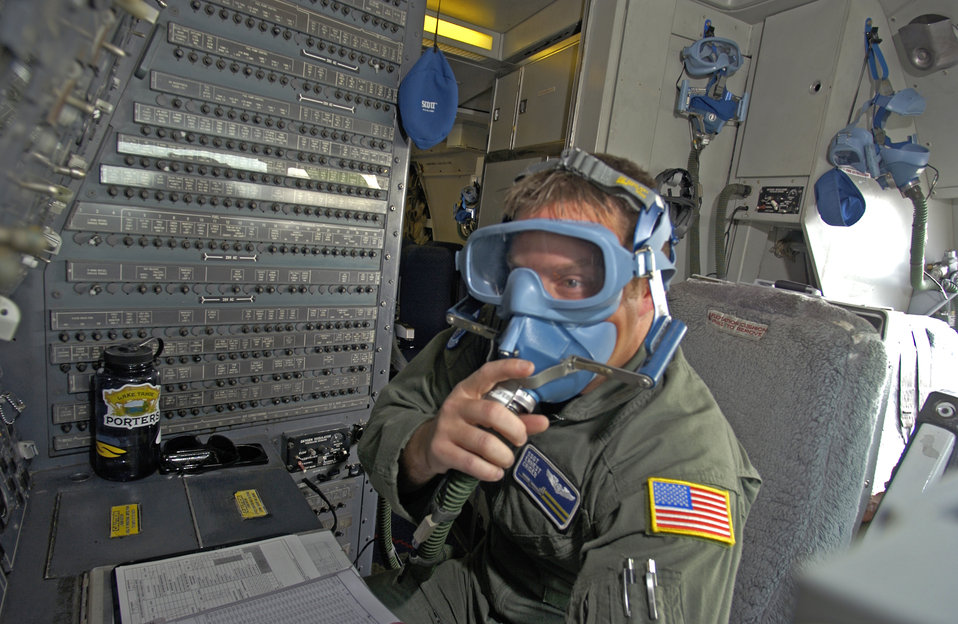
Extending the mission

TRAVIS AIR FORCE BASE, Calif. -- Staff Sgt Ernest Crider performs an operations check on an emergency oxygen mask and goggles as part of his preflight checks on the flight deck of a KC-10A Extender. The aircraft, including fuel and crew, weighs 370,000 pounds at takeoff and will perform air refueling training over the western region of the United States. Sergeant Crider is a flight engineer with the 6th Air Refueling Squadron here.